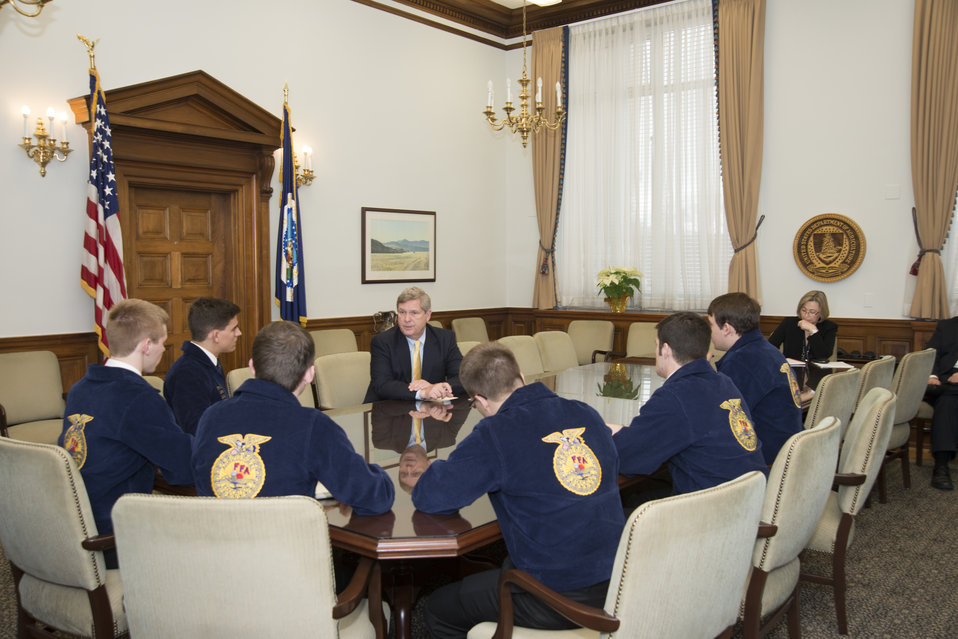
Agriculture Secretary Tom Vilsack meets with National FFA officers at the U.S. Department of Agriculture (USDA), Whitten Building in Washington, DC, on Wednesday, Jan.15, 2014. (L to R Secretary Mitch Baker, Eastern Region Vice President Wes Davis, President Brian Walsh, Central Region Vice President Steven Brockshus, Western Region Vice President Jason Wetzler, and Southern Region Vice President Jackson Harris).